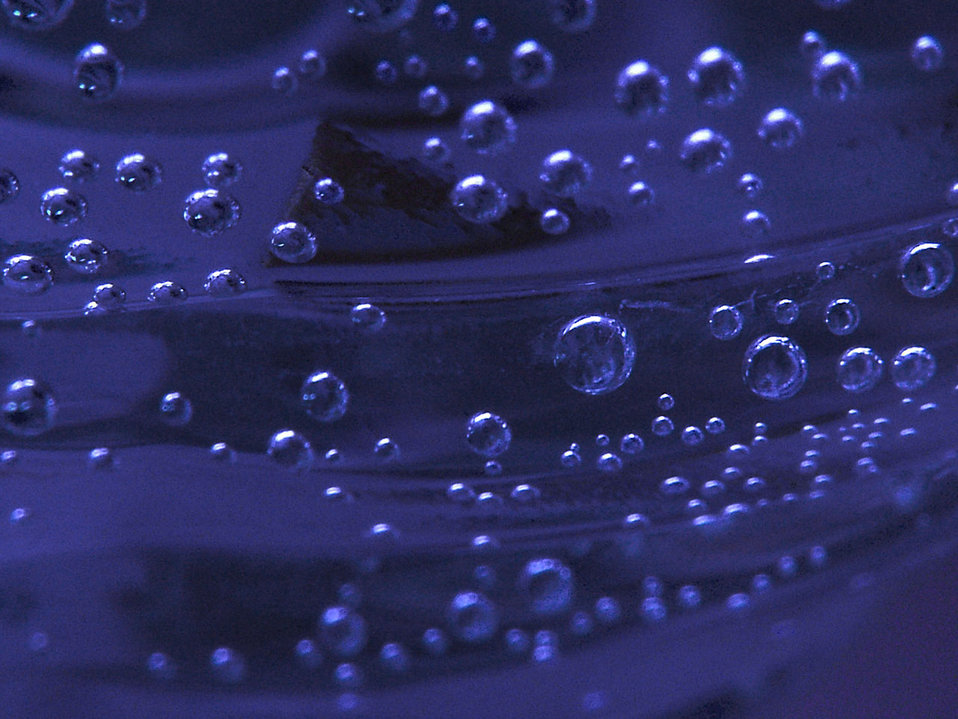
Bubbles of water.